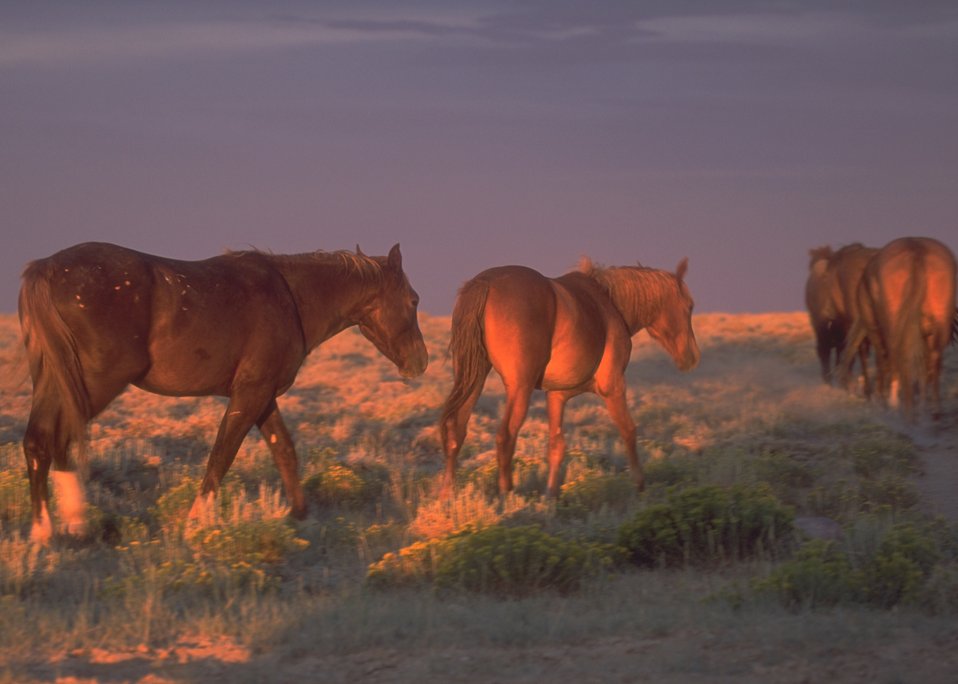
Wild horses, Rock Springs Field Office.